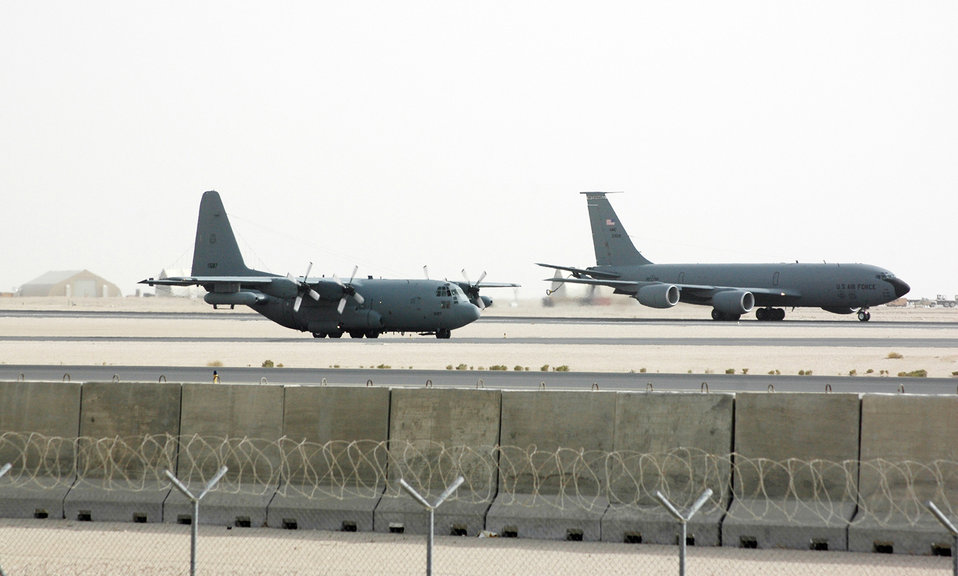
July 7 airpower summary

An EC-130H Compass Call from Davis-Monthan Air Force Base, Ariz., waits to take off at a deployed location in Southwest Asia while a KC-135 Stratotanker prepares for another refueling sortie. The Compass Call version of the C-130 Hercules is a versatile and flexible aircraft and its crew can bring the power of electronic combat to bear in virtually any combat situation.